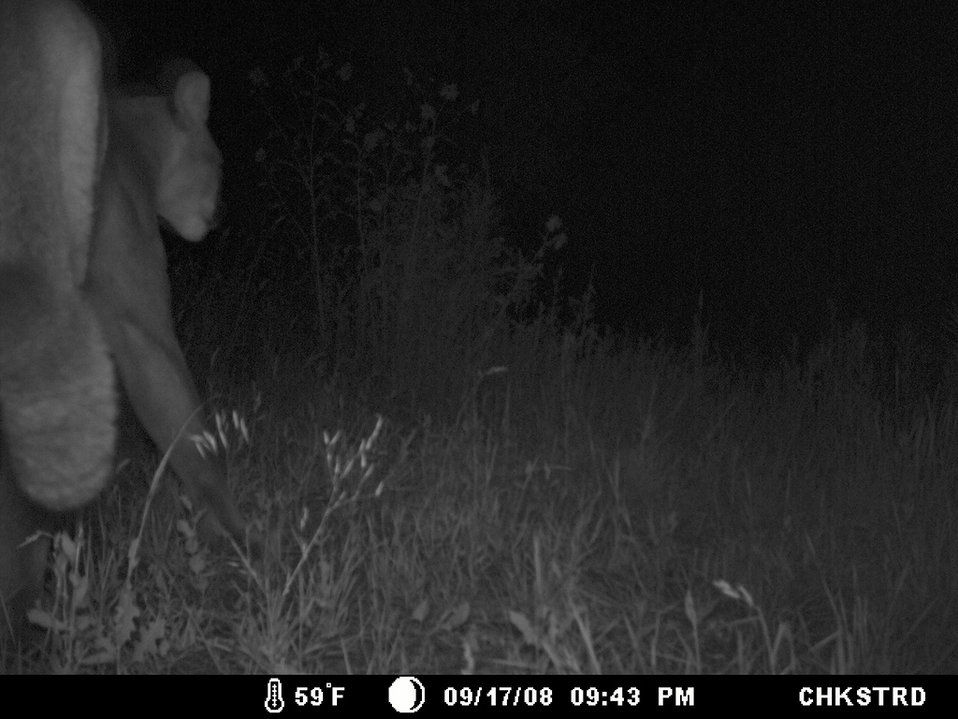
mountain lion

Bosque del Apache National Wildlife Refuge, NM
Camera trap project by Matthew Farley, Jennifer Miyashiro and James Stuart
Photo made available by J.N. Stuart, Creative Commons